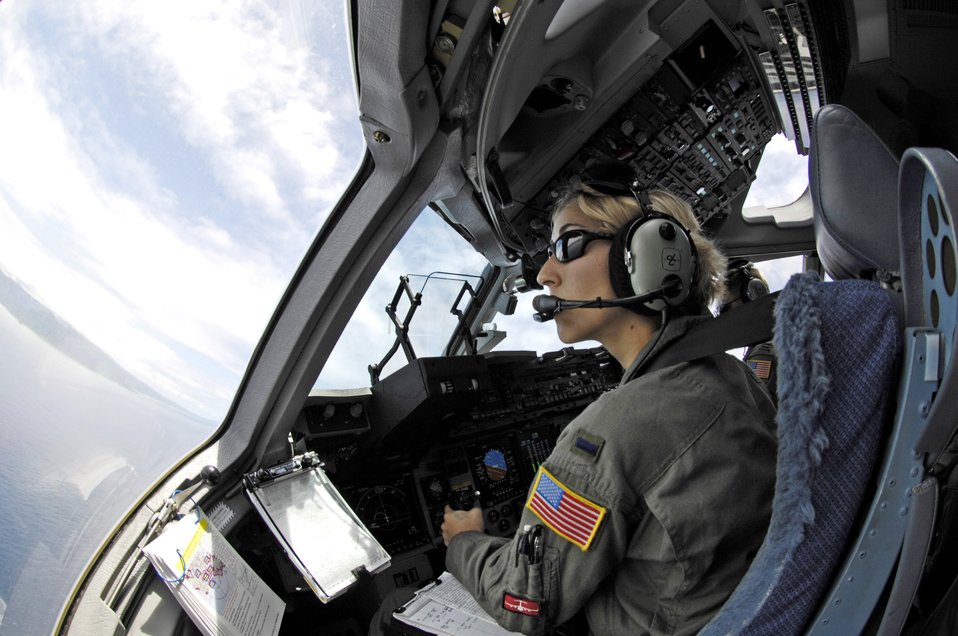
Practice makes perfect

C-17 Globemaster III pilot 1st Lt. Lindsay McWhirter practices assault landings at Marine Corps Base Hawaii, Kaneohe Bay, during a local training mission May 30. Lt. McWhirter is from the 535th Airlift Squadron, Hickam Air Force Base, Hawaii.